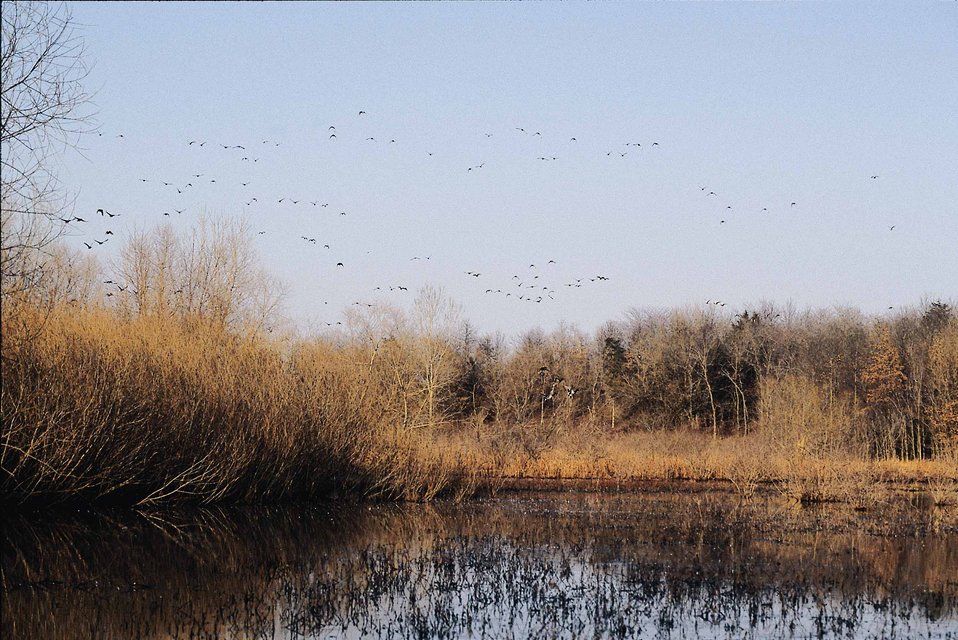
Habitat for ducks and geese on a restored wetland in Van Buren County, Iowa.